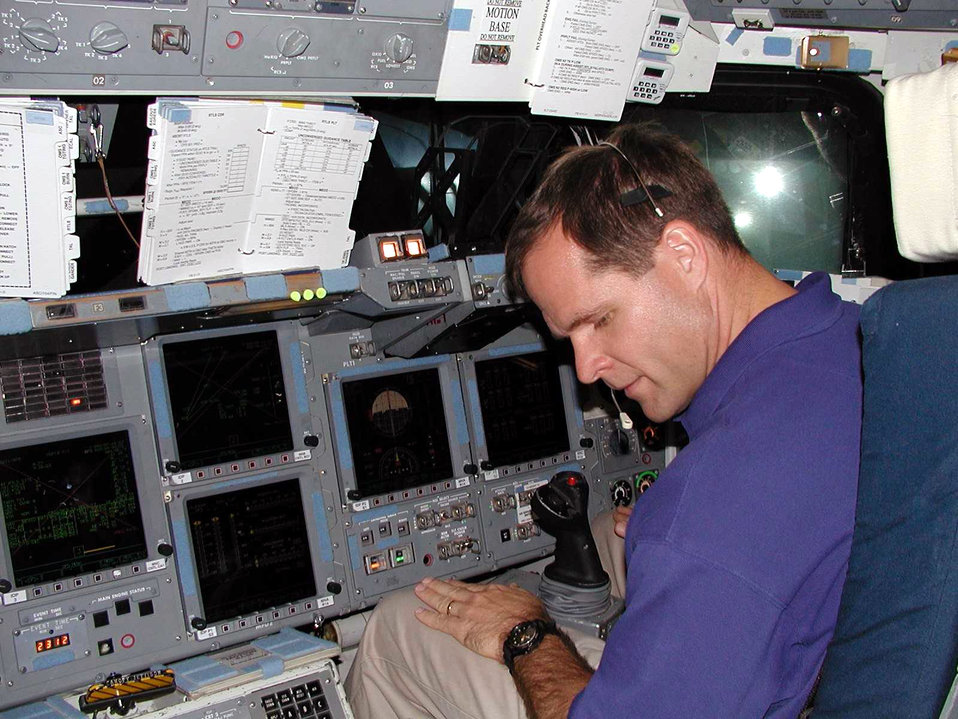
Pilot school highlights space education

EDWARDS AIR FORCE BASE, Calif. -- Kevin Ford, a NASA astronaut, teaches aerospace vehicle test course students how to fly the full-motion space shuttle simulator at the Johnson Space Center in Houston. The students are from the Air Force Test Pilot School at Edwards Air Force Base, Calif.